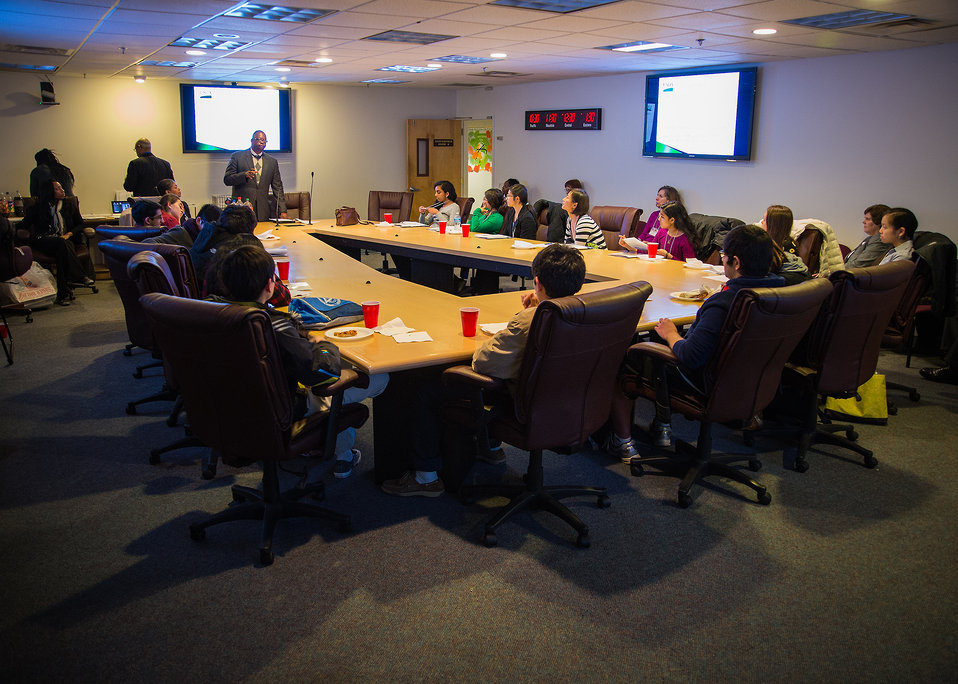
Marcus Brownrigg, Senior Advisor to the Chief Human Capital Officer at USDA explained the Pathways Program to students from Thomas Jefferson High School of Science and Technology in Alexandria, VA during the U. S. Department of Agriculture (USDA), Office of the Chief Information Officer (OCIO) IT Job Shadow Day, Tuesday, Mar. 25, 2014. The OCIO IT Job Shadow Day hosts students from local high schools in the Washington, D.C. area annually with IT professionals and agricultural specialists from a variety of mission areas at USDA.